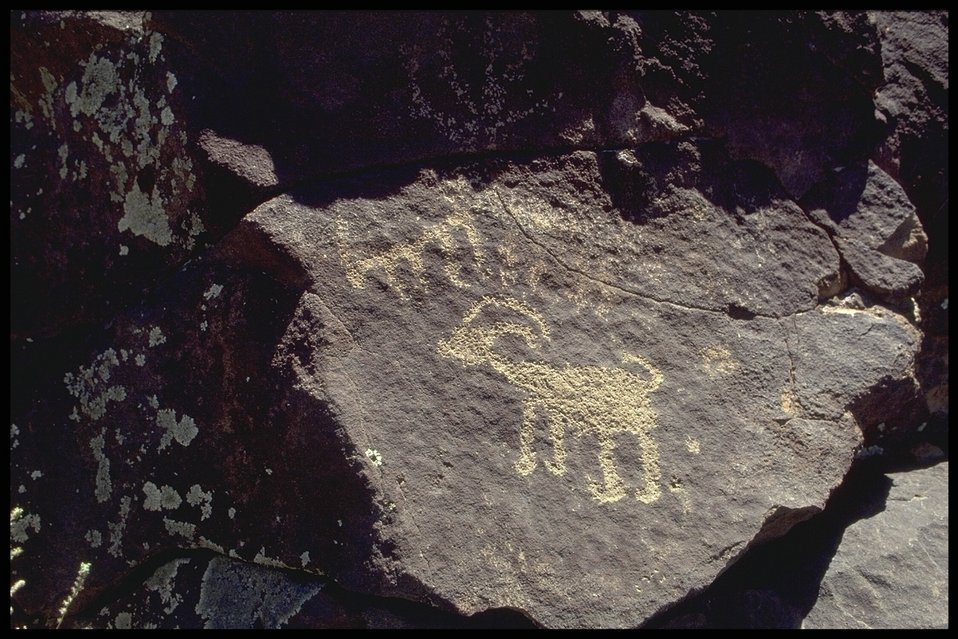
Petroglphs (Rock Art) can be found throughout the 71,000 Acres that make up the Agua Fria National Monument.